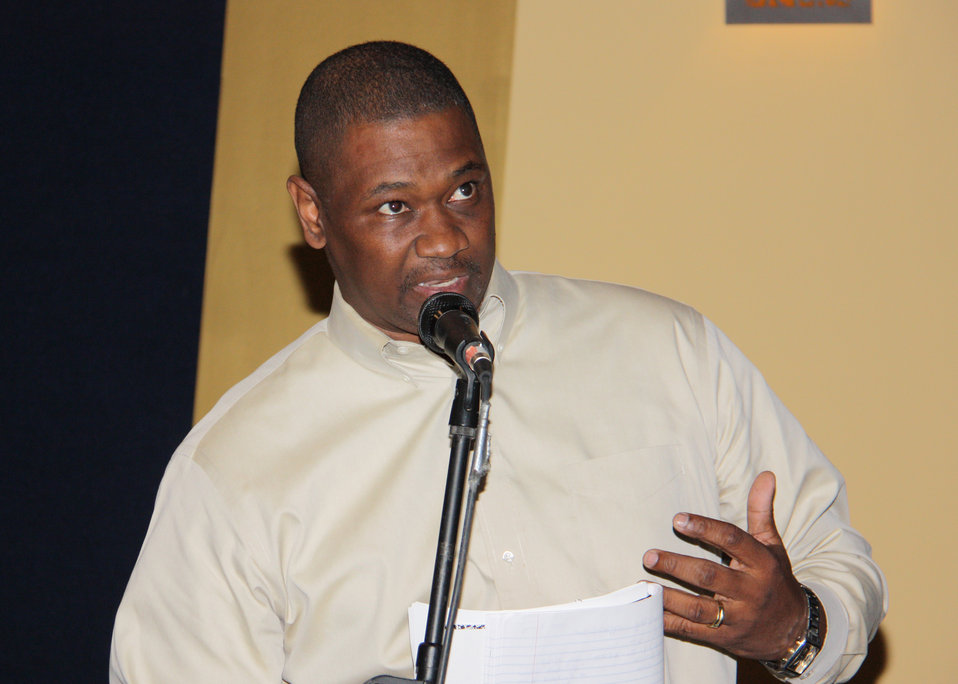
The U.S. Department of Agriculture (USDA) held the Cultural Transformation Employee listening sessions in Davis, CA, on Monday, April 12, 2010. USDA employees expressed their concerns with issues at the Department and made suggestions for correcting them and improving the image of USDA. USDA photo 10di1299-0961.